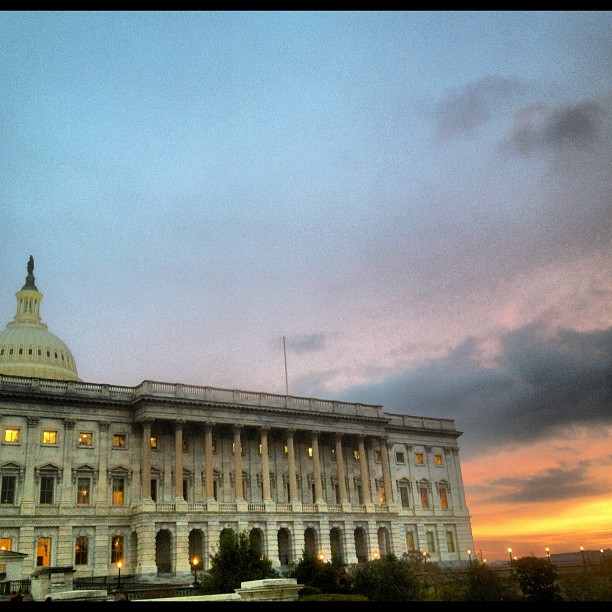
Sunset at the Capitol.